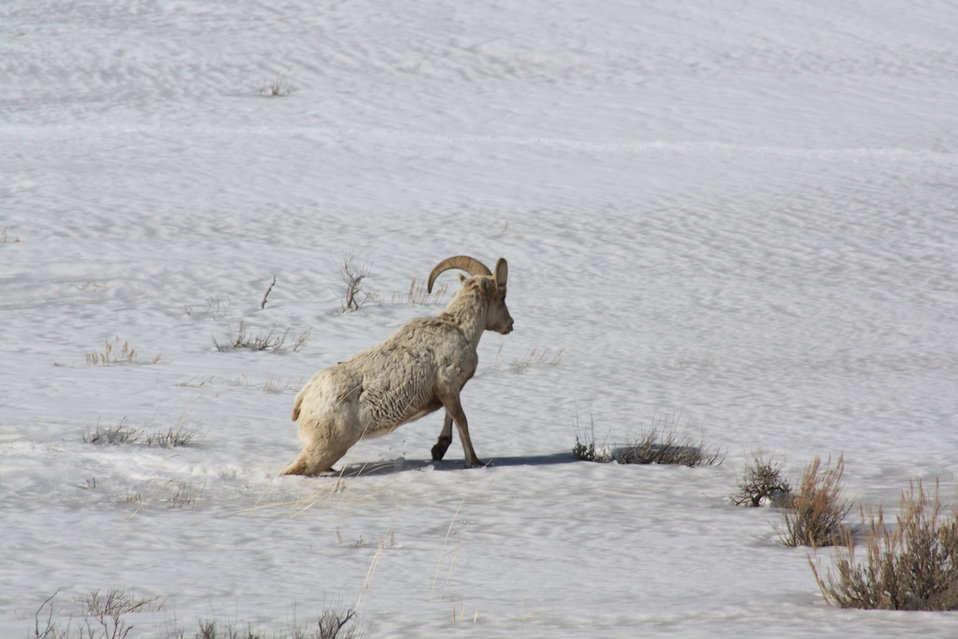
Bighorn Sheep in Snow

Bighorn sheep are more susceptible to predators on flat terrain than on rocky cliffs, where physical adaptations give them an advantage. This bighorn sheep struggling through the snow would be at a disadvantage against a predator such as a wolf, coyote, or mountain lion. Bighorn sheep generally stay close to escape cover as a defense mechanism.

Credit: USFWS / Ann Hough, National Elk Refuge volunteer